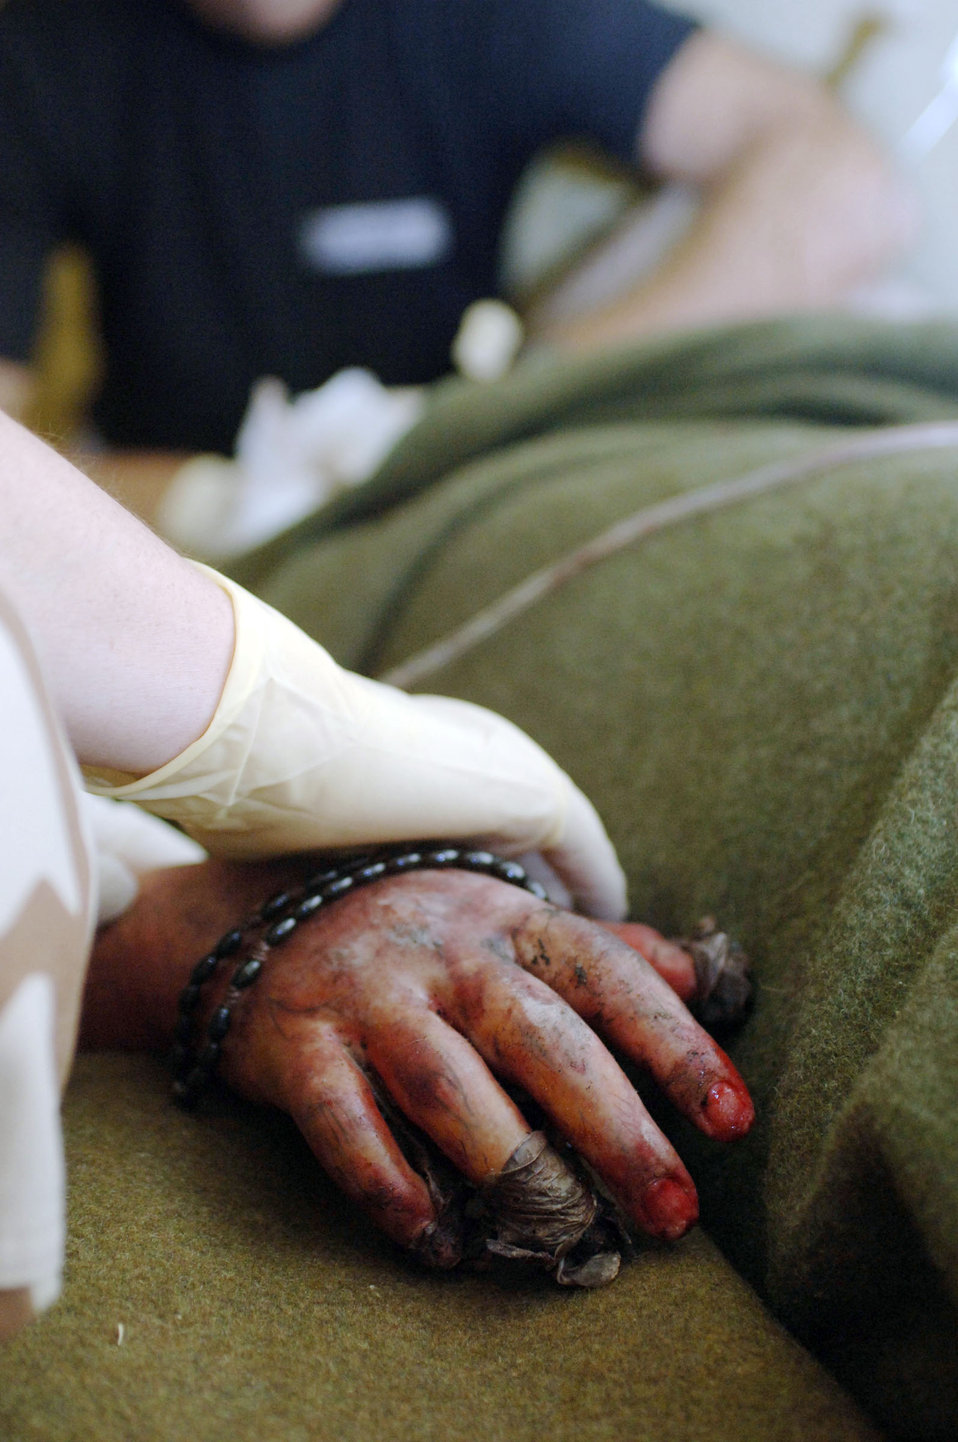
Air Force hospital saves Iraqi lives

BALAD AIR BASE, Iraq -- A supporting hand rests on an Iraqi victim of a suicide car bomb attack in the town of Balad near here.